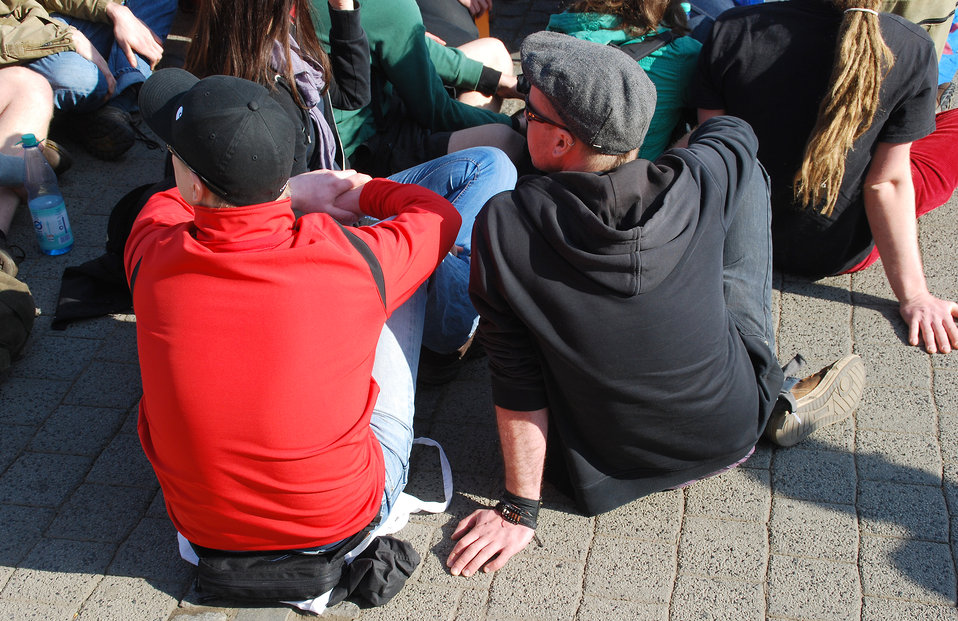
Proteste gegen den Nazi-Aufmarsch am 24.3.2012 in Frankfurt (Oder)